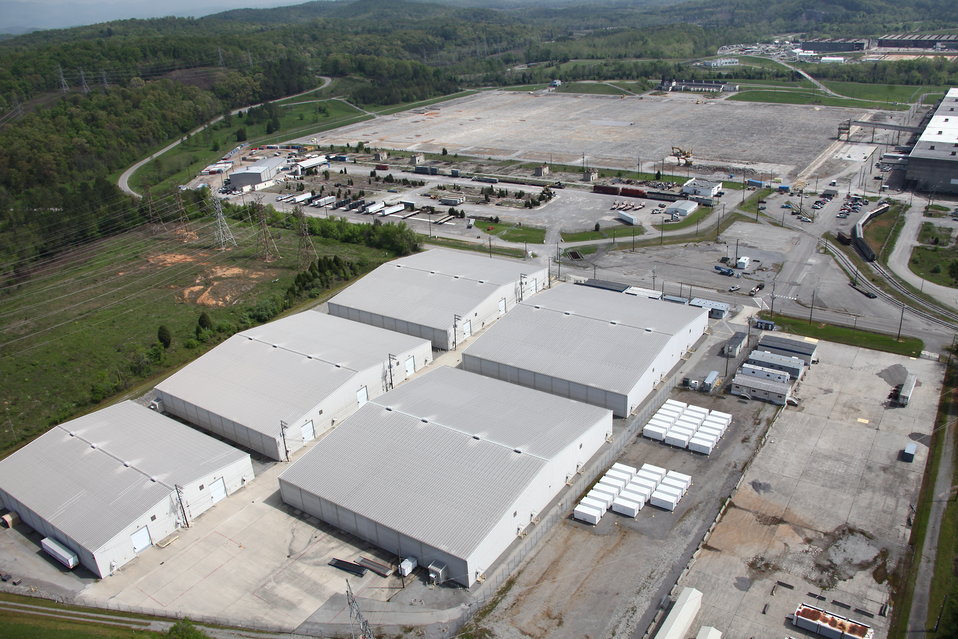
ETTP